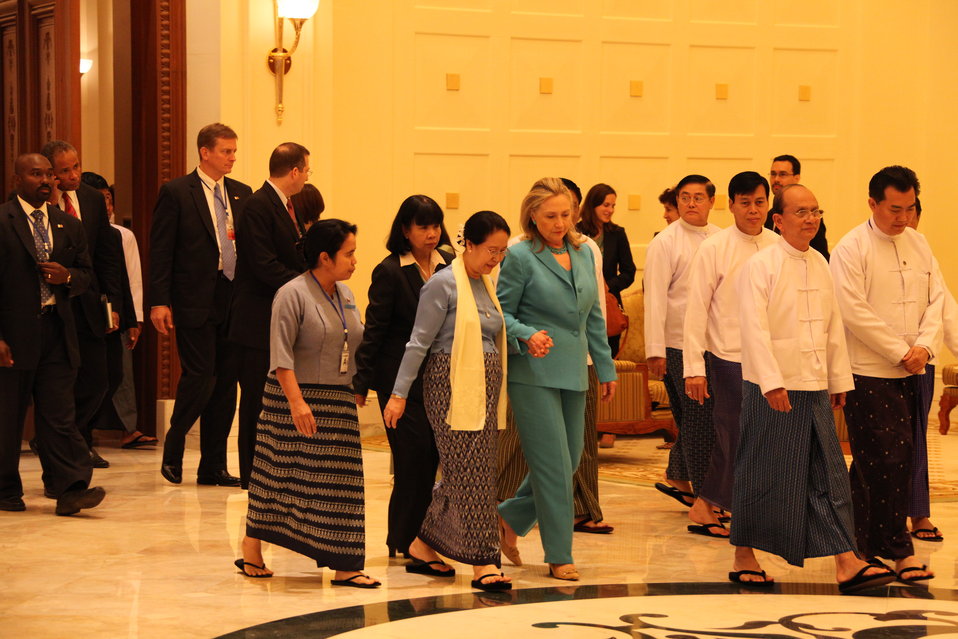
Secretary Clinton Meets With Burmese First Lady Daw Khin Khin Win

U.S. Secretary of State Hillary Rodham Clinton meets with with Burmese First Lady Daw Khin Khin Win at the Office of the President in Nay Pyi Taw, Burma, on December 1, 2011.